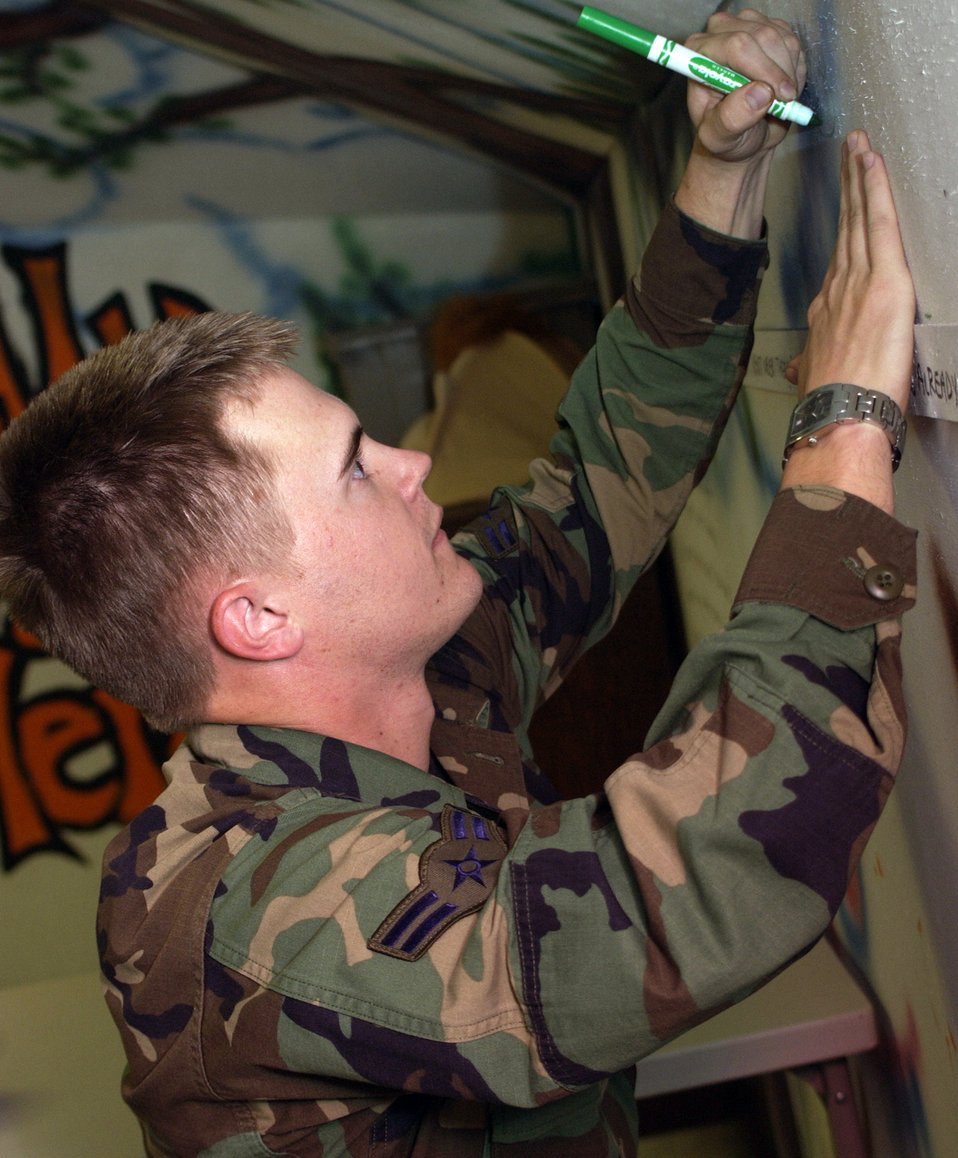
A helping hand

KEESLER AIR FORCE BASE, Miss. (AFPN) -- Airman 1st Class Josh Young signs his name inside a tent at Rudy Moran Park in D'Iberville, Miss. When volunteers come to the site, they are asked to sign the wall to commemorate their visit. Airman Young was part of a group of Airmen from the base that delivered relief supplies. He is with the 336th Training Squadron.